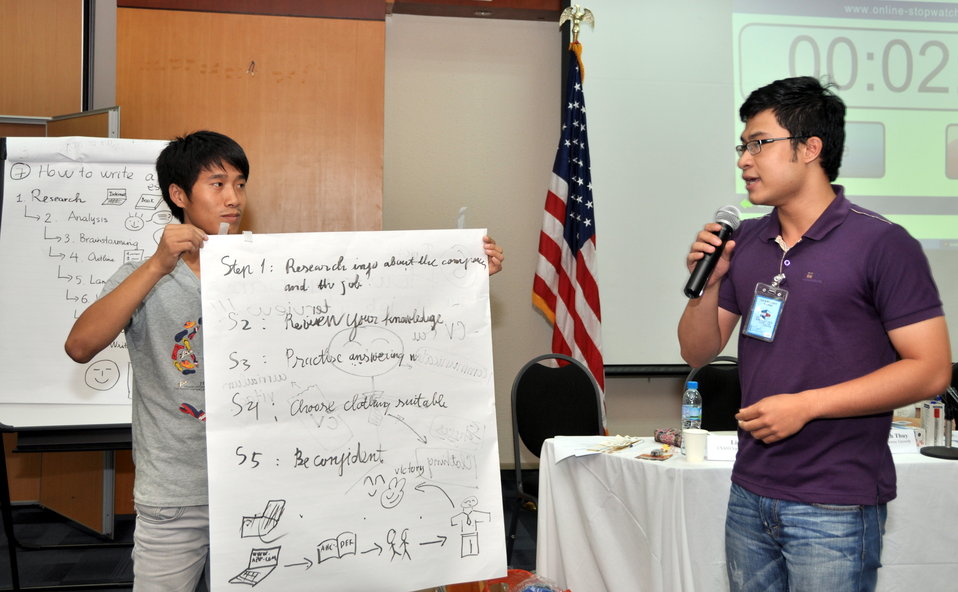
Students join the ‘USAID and Higher Education in Vietnam’ talk

Photo: @USAIDVietnam, November 19, 2012